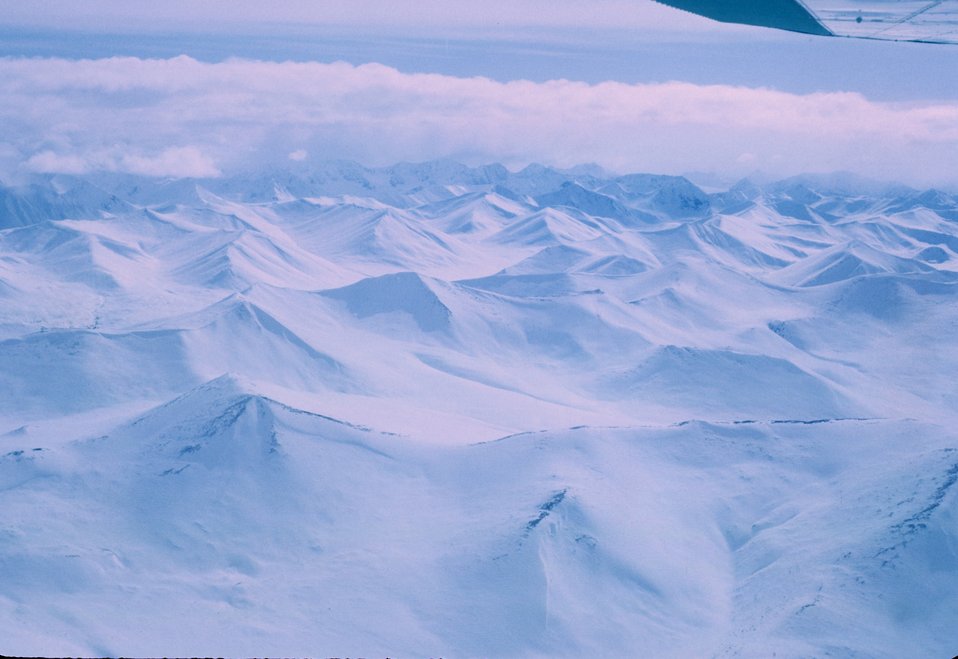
Aerial view of Alaska coast ranges between Juneau and Anchorage